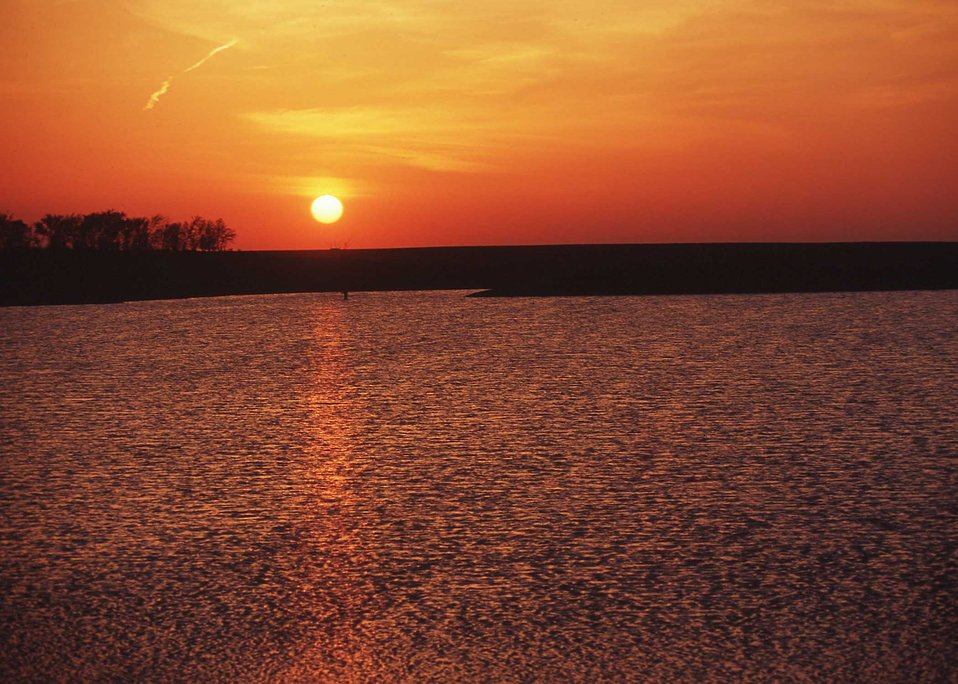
Sunset over a lake in eastern South Dakota.